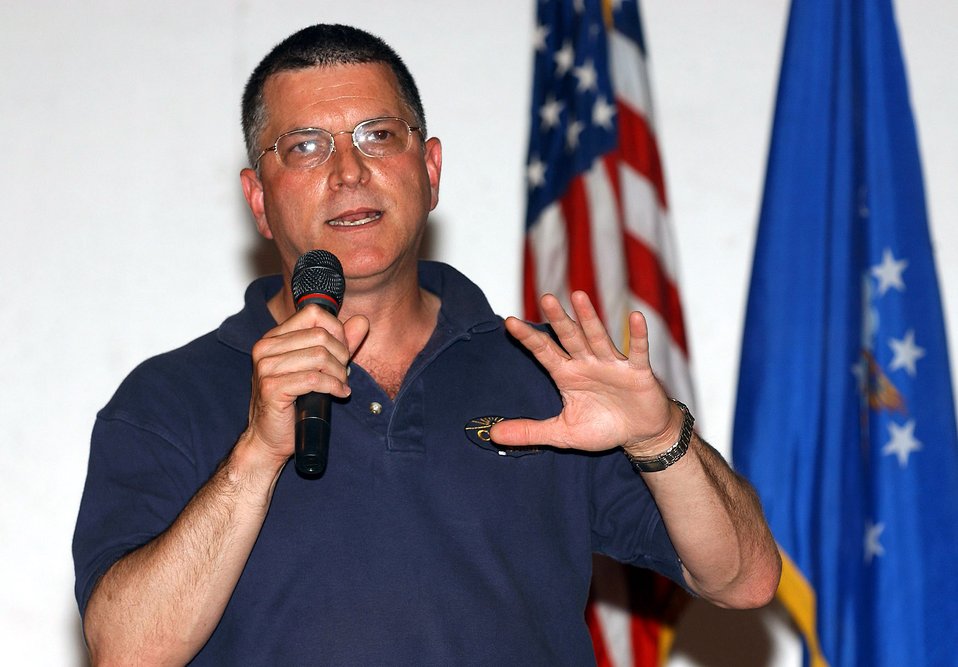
Dominguez talks about present course in Iraq, future for Airmen

TALLIL AIR BASE, Iraq -- Michael L. Dominguez, acting secretary of the Air Force, speaks during a troop call here June 29. He told Airmen the importance of the U.S. military's mission in Iraq and what the future image of an Air Force warfighter will look like for the next few years.